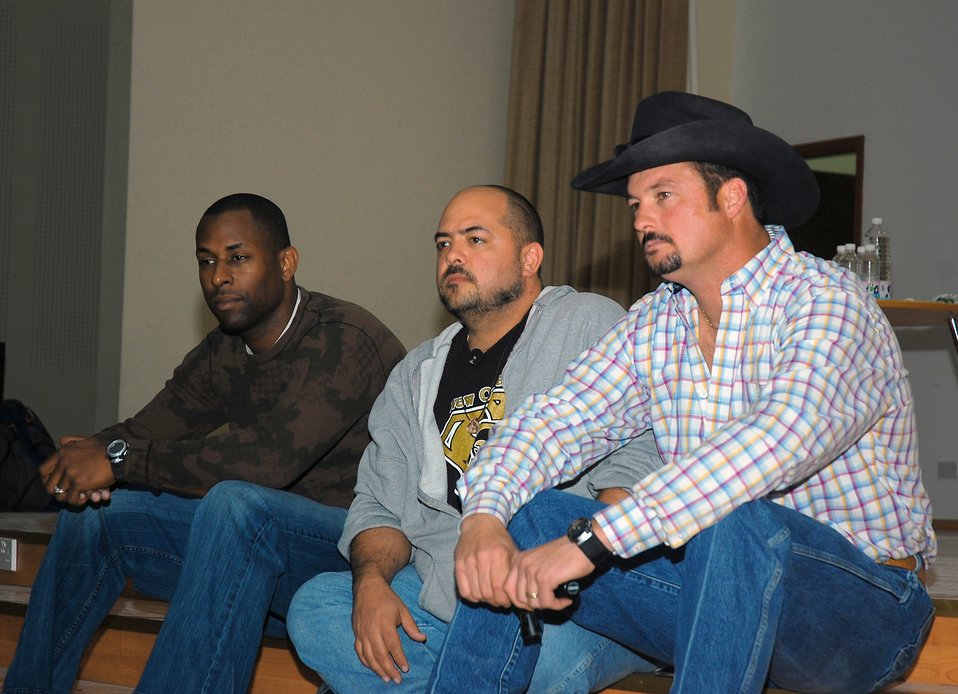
Entertainers use humor to deliver 'We Support You' message

Comedians Danta Jackson (left to right), Bill Dykes, and the cowboy comedian listen to a question during an interview prior to their show Feb. 26 at a Southwest Asia air base. The comedians are on a Multinational Corps Iraq, Army Morale Welfare Recreation, Lone Wolf Entertainment Comedy Tour 2008, which provides entertainment to deployed troops in support of operations Enduring Freedom and Iraqi Freedom.